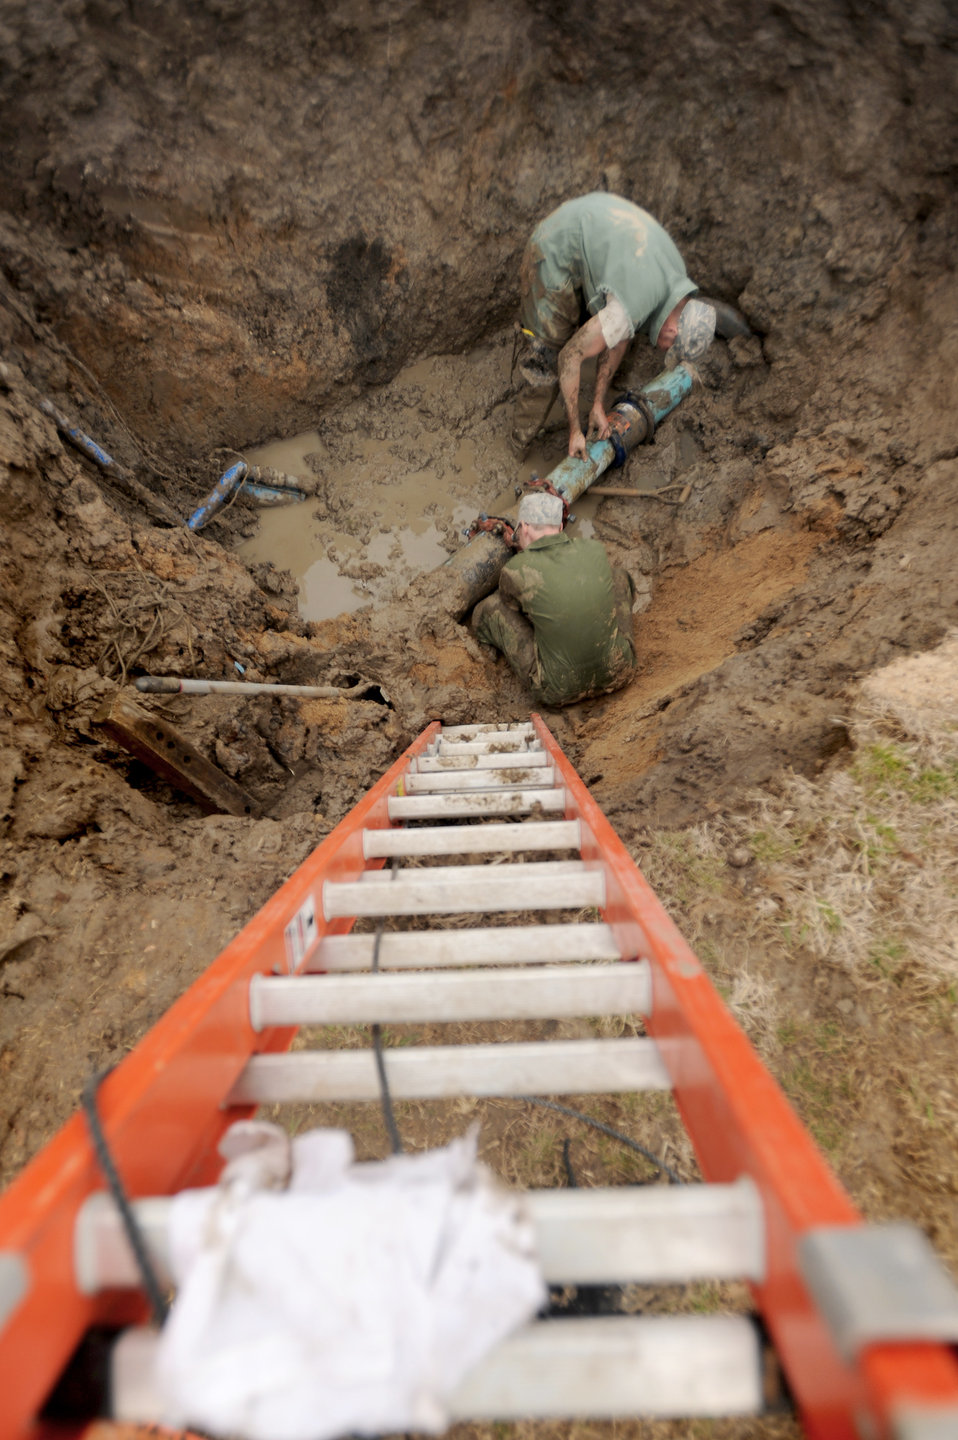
Maintenance specialists

A ladder leads into a muddy pit where Staff Sgt. Justin England (left) and Senior Airman Sean O'Connor work to repair a busted water main March 7, 2011, at Whiteman Air Force Base, Mo. Sergeant England and Airman O'Connor are maintenance specialists assigned to 509th Civil Engineer Squadron.